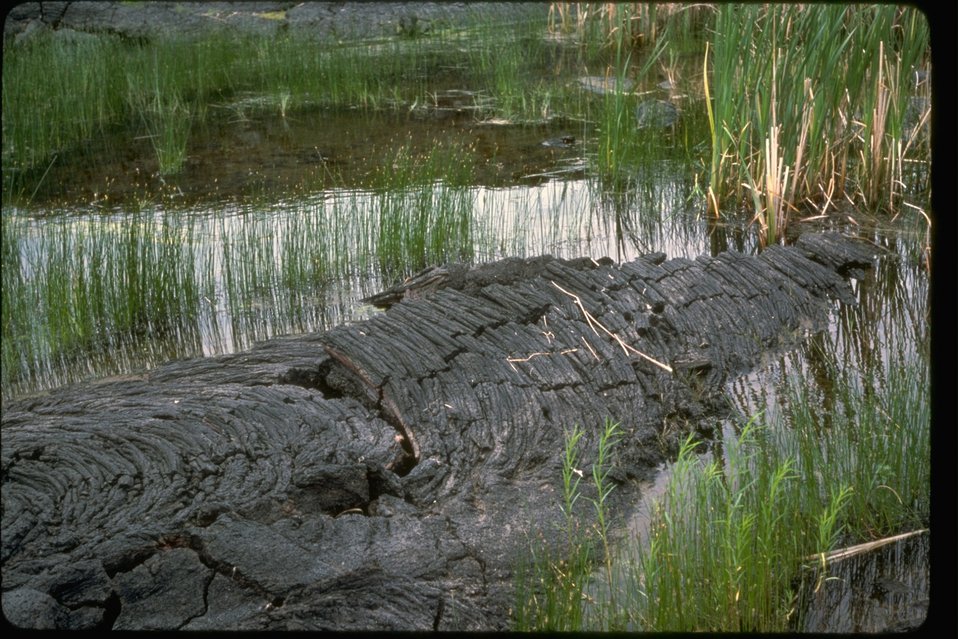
Good example of ropey pahoehoe lava near Batch Lake in the Jordan Craters Wilderness Study Area. OR 3-128